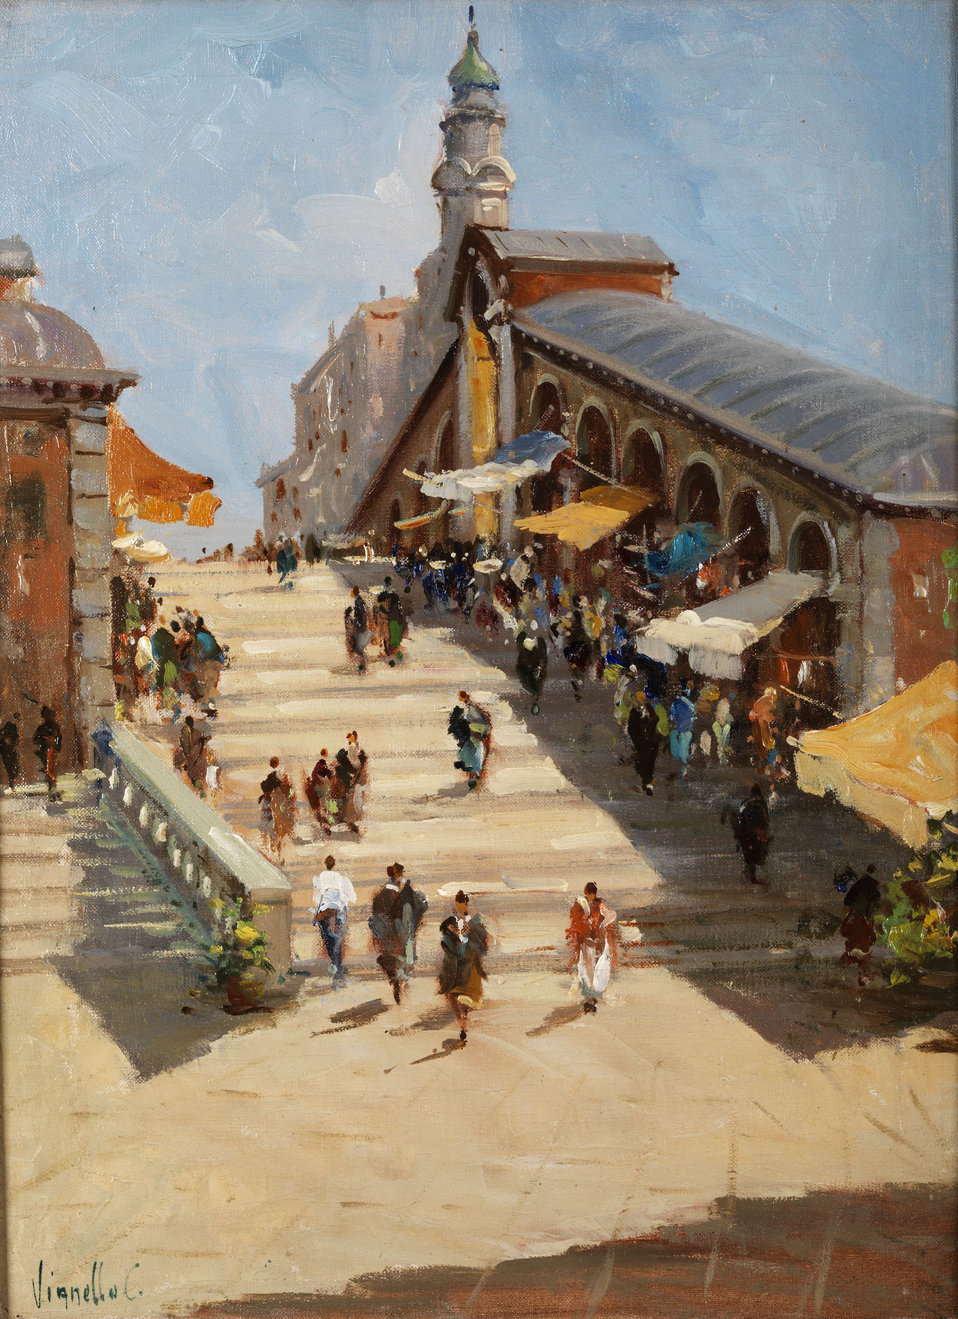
Die Rialtobrücke in Venedig. Öl auf Leinwand. 30,5 x 40,5 cm. Links unten signiert.